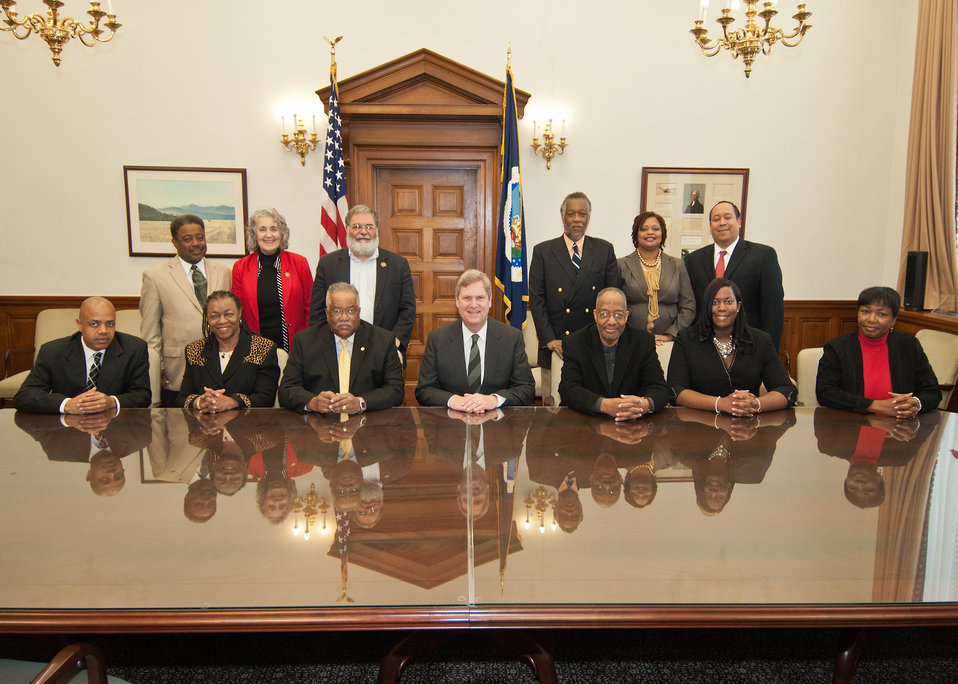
Agriculture Secretary Tom Vilsack and the Federation of Southern Cooperatives met at the United States Department of Agriculture to discuss mutual agricultural issues on Tuesday, December 14, 2011. Standing from left: John Zippert, Veronica Womack, Bobby Wilson, Ben Burkett, Heather Gray and Stephen Peychaud. Seated from left: Cornelius Blanding, Melbah Smith, Ralph Paige, President, Agriculture Secretary Tom Vilsack, Jerry Pennick, Monica Armster Rainge and Karen Landry.